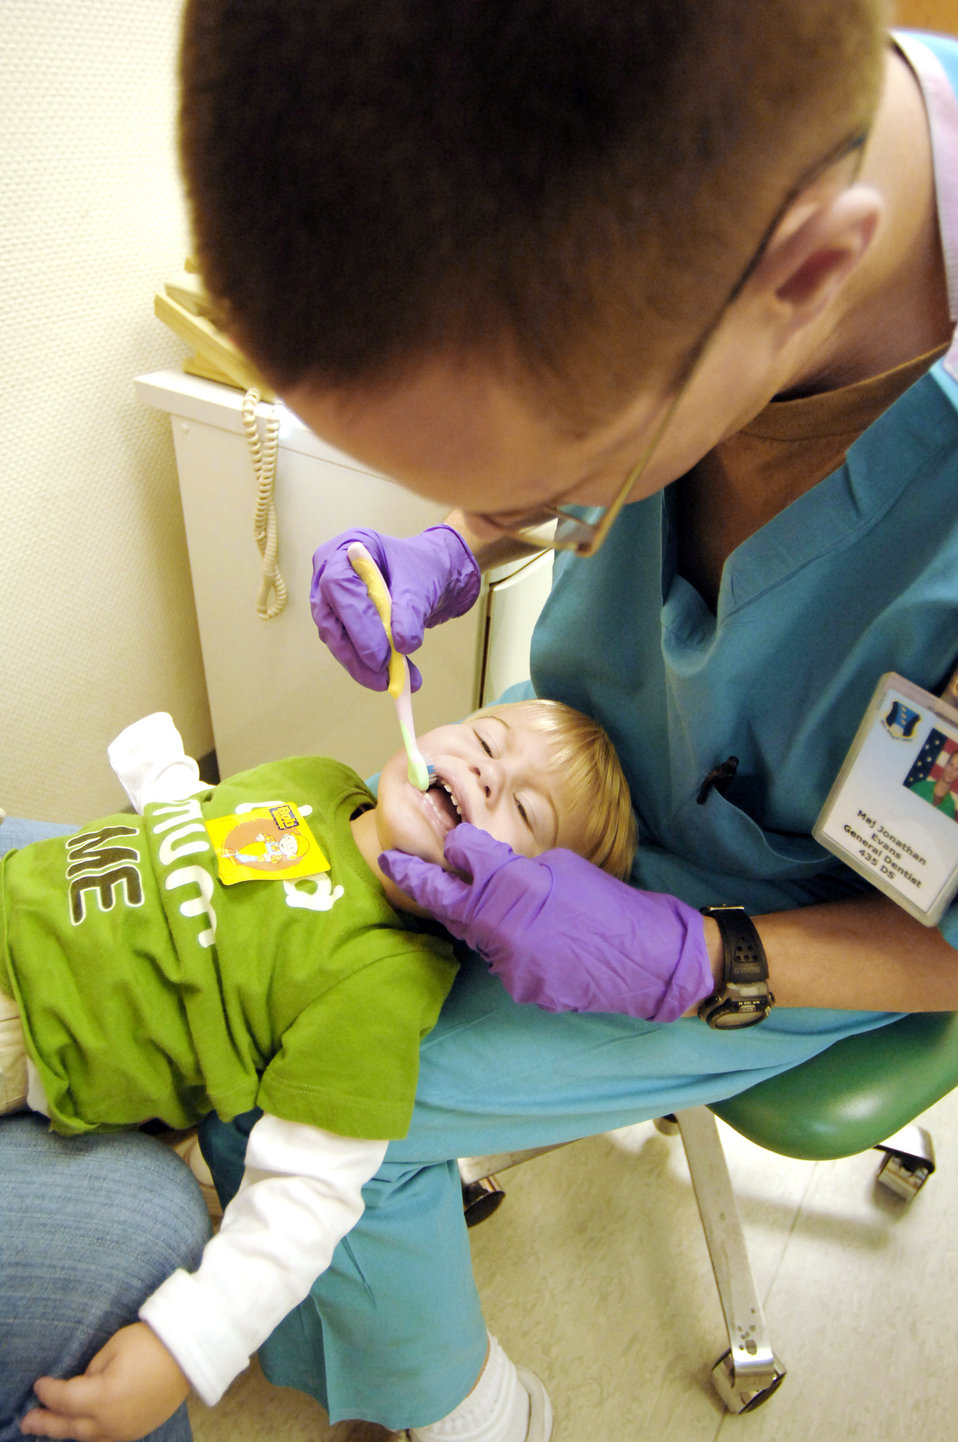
Ramstein dental techs emphasize early preventative care

Maj. (Dr.) Jonathan Evan flosses Hayden Voss' teeth during his first trip to the dentist Sept. 23, 2009, at Ramstein Air Base, Germany. Dentists at the 86th Dental Squadron see hundreds of children each year from the Kaiserslautern Military Community. For the initial visit, Doctor Evans emphasizes the importance of parentally involvement and the child's overall dental well-being. Doctor Evan is an 86th Medical Group general dentist.